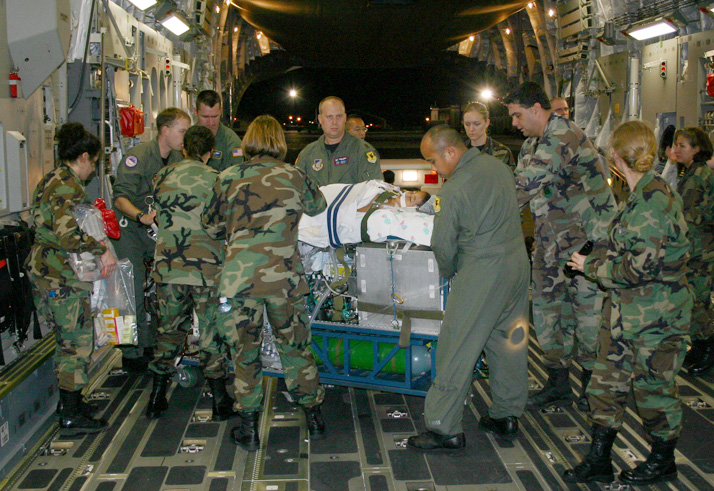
Medical team journeys across Pacific

LOS ANGELES (AFPN) -- The Wilford Hall medical team and C-17 Globemaster III aircrew carefully move the more than 800-pound mobile extracorporeal membrane oxygenation, or ECMO, machine and Meaghan Ababa down the aircraft ramp to a waiting ambulance for transport to the Children's Hospital in Los Angeles Feb. 4. The ECMO machine works as a heart-lung bypass machine providing temporary heart and lung function during periods of severe cardiopulmonary failure. The patient made the six-hour flight from Hawaii to Los Angeles without incident.